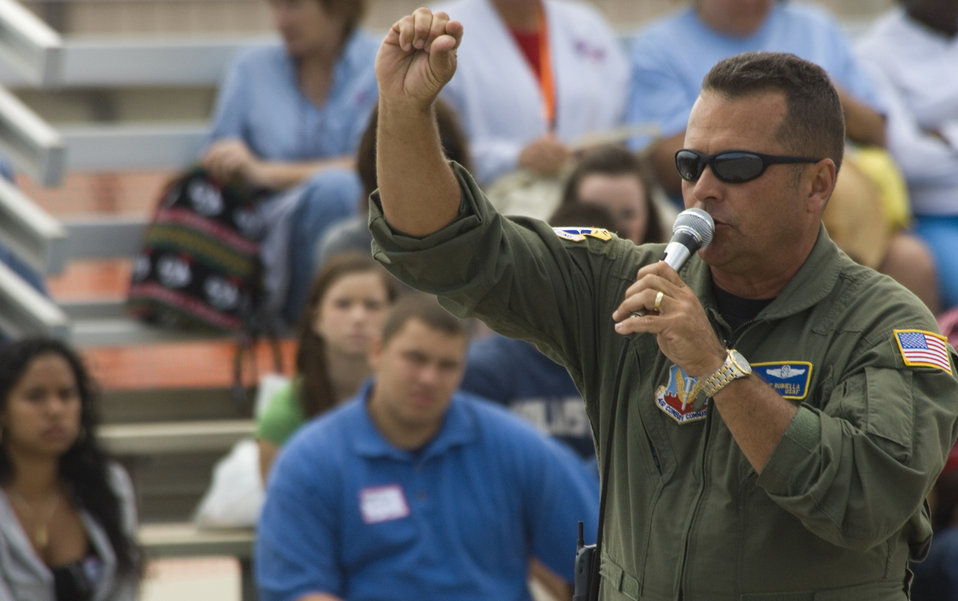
'Not on Our Watch'

Senior Master Sgt. Rene Rubiella, who lost his daughter, Allie, in an automobile accident in 2005, talks to high school seniors attending Operation NOW events on Tuesday, April 11, 2006, at Patrick Air Force Base, Fla. NOW stands for Not on Our Watch. Sergeant Rubiella, an HC-130 radio operator with the 920th Rescue Wing and Operation NOW coordinator, talked about the loss of his daughter and emphasized the importance of safe driving.